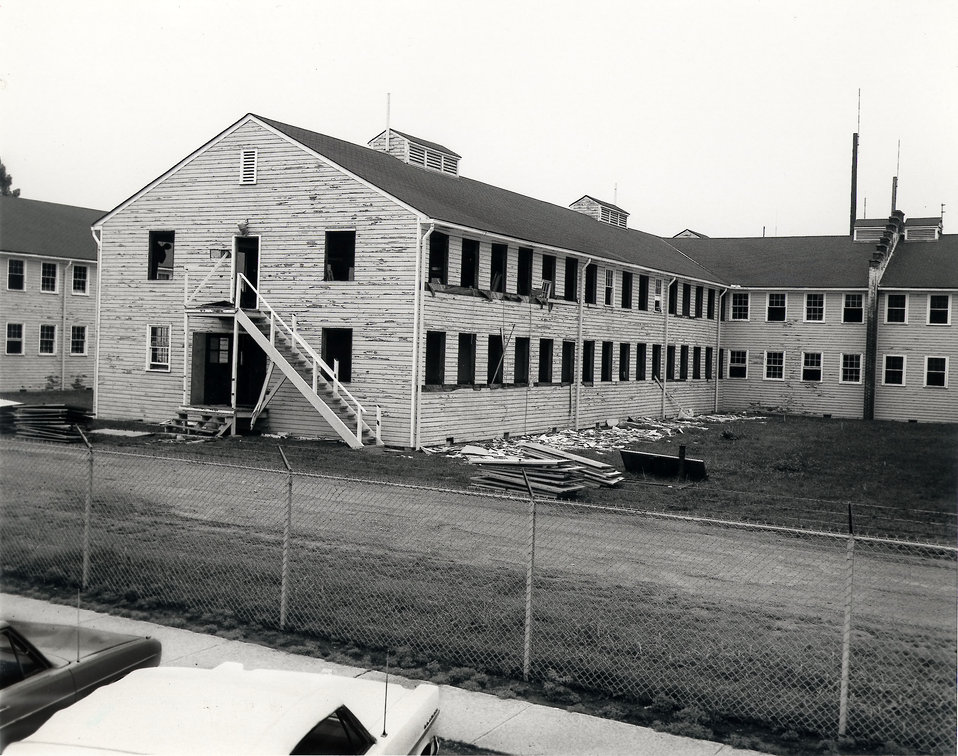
AEC Admin. Bldg. Oak Ridge

205-6 DOE Photo by Ed Westcott